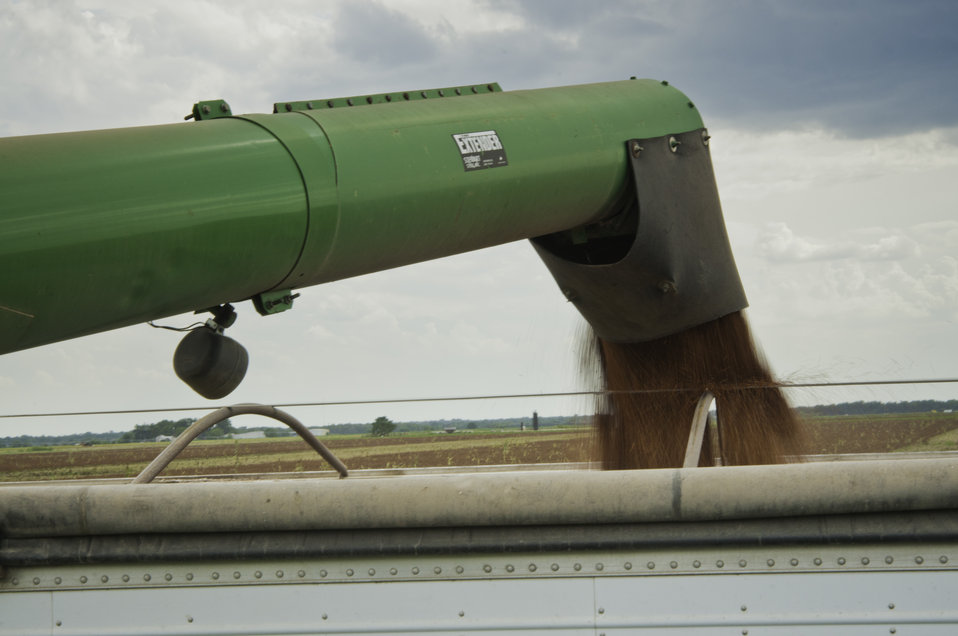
Grain sorghum is harvested on the Wilder Farms in Navasota, TX on Aug. 23, 2013.